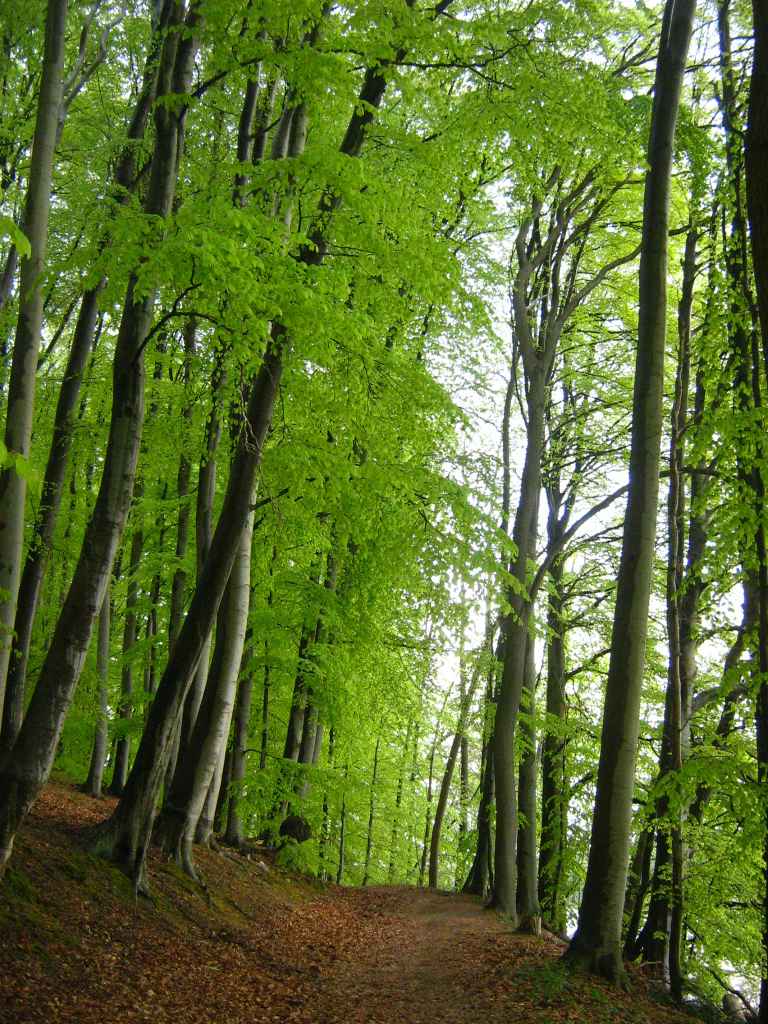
Deutsch: Raben Steinfelder Forst am Pinnower See im Landkreis Parchim (Mecklenburg).